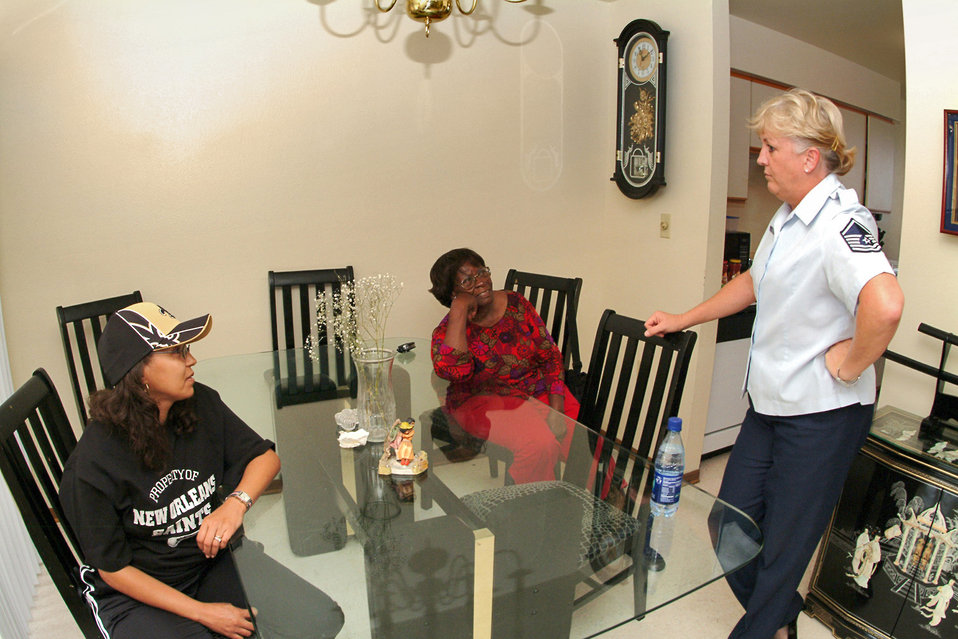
Hospitality

HURLBURT FIELD, Fla. -- Master Sgt. Lisa Casteel chats with Clara Reeves and Monique Albert during a visit to drop off dinner for the family. Tech. Sgt. Christopher Reeves opened his home to more than 20 family members after they evacuated New Orleans. Sergeant Casteel is assigned to the 53rd Wing at nearby Eglin Air Force Base. Sergeant Reeves is assigned to the 16th Logistics Readiness Squadron here.